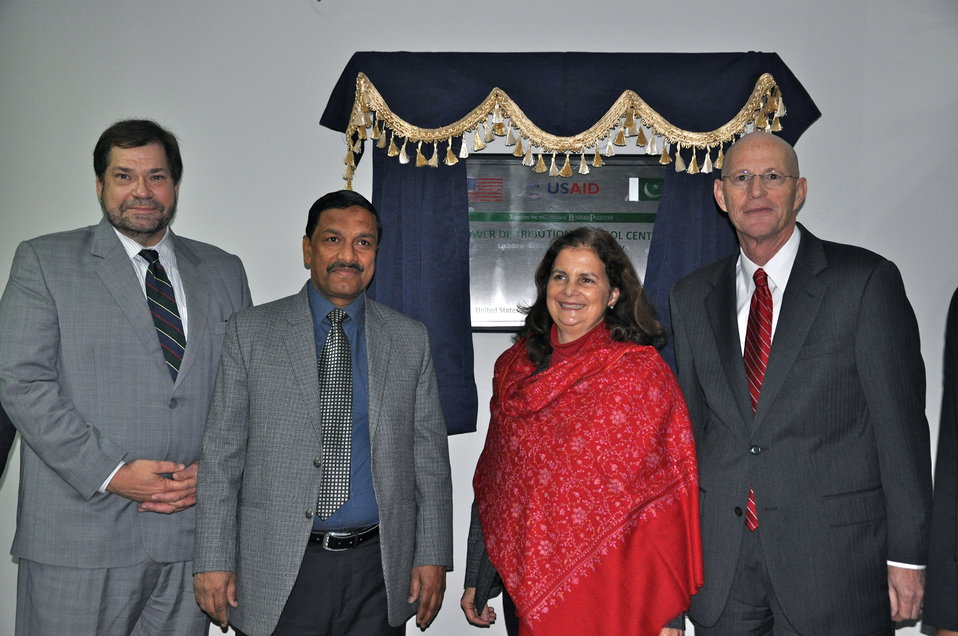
(Left to Right): USAID Provincial Director Jeffrey Bakken, CEO LESCO Muhammad Arshad Rafiq, U.S. Consul General Nina Maria Fite, and USAID Mission Director Gregory Gottlieb inaugurating the Power Distribution Control Center at LESCO

U.S. Improves LESCO’s Capacity to Reduce Load-Shedding

Lahore, February 6, 2014: Marking a milestone in U.S. support to Pakistan’s energy sector, U.S. Consul General Nina Maria Fite inaugurated the Power Distribution Control Center at the Lahore Electric Supply Company (LESCO). The LESCO center was established with support from the U.S. Agency for International Development (USAID) and will enable LESCO to monitor the flow of power through their grid stations. The new meters will verify actual power flow and reduce unplanned load-shedding.

“This project will provide real-time access to electricity load data to managers of Pakistan’s electricity grid and help LESCO overcome unscheduled load-shedding,” said Consul General Fite. “The U.S. Government and the American people are committed to assisting the Government of Pakistan to improve the power distribution system throughout Pakistan. We partner with power distribution companies to improve their operations, reduce losses, and ultimately make sure that the Pakistani people have a more reliable power supply.”

Unplanned load-shedding is one of the leading challenges in the country’s power crisis, costing Pakistan an estimated two percent of its Gross Domestic Product and 400,000 jobs in 2012. Load-shedding is a consequence of the imbalance between electricity generation and demand, and only increased generation will completely eliminate load-shedding. Unscheduled load-shedding, however, is the result of a lack of real-time energy consumption data and can be reduced by improved monitoring systems, such as the USAID project inaugurated at LESCO.

USAID’s five-year Power Distribution Program seeks to work jointly with government-owned DISCOs in Pakistan to improve their performance, reducing losses and improving revenues and customer services. Through this program and many others, the United States provides assistance to the Government of Pakistan in its efforts to reform the power sector and end the current energy shortfall.

More information about the Power Distribution Program can be found on the program’s website at pdip.pk.